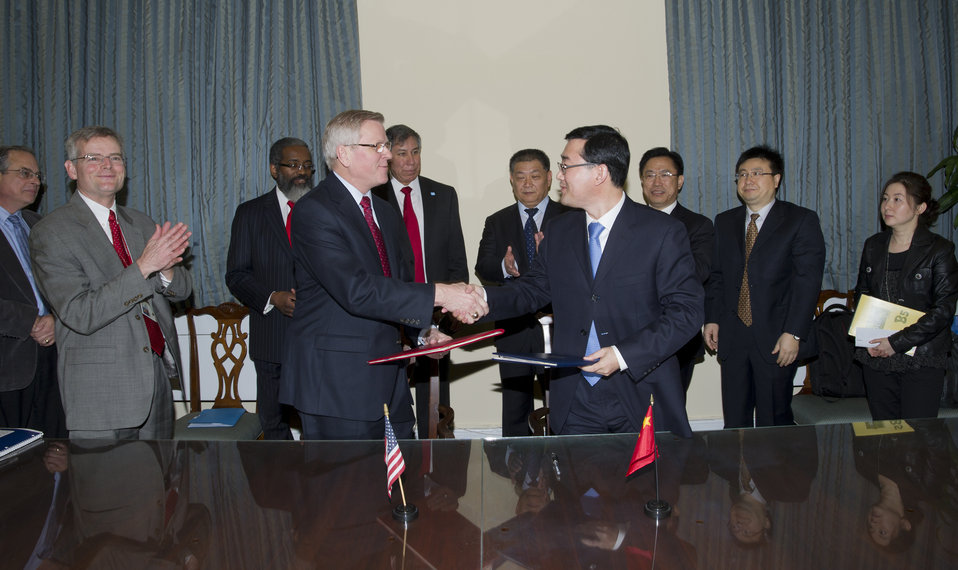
Deputy Administrator and Chief Veterinary Officer for APHIS' Veterinary Services' (VS) Dr. John Clifford (left) and Deputy Director General Department of Supervision on Animal and Plant Quarantine Administration of Quality Supervision, Inspection and Quarantine (AQSIQ) Zhao Zenglian shake hands after signing a Memorandum of Understanding (MOU) on fruit packing house suspensions; and export protocol for U.S.-origin breeding chickens (including hatching eggs and day-old chicks) at the U.S. Department of Agriculture in Washington D.C. on Tuesday, Feb. 14, 2012. Standing (left to right) Director, Center for Plant Health and Science Technology Dr. Phillip Berger, Animal and Plant Health Inspection Service (APHIS) Internal Service (IS) Russell Caplen, Administrator
Animal and Plant Health Inspection Service (APHIS) Greg Parham, Agriculture Under Secretary for Marketing and Regulatory Programs (MRP) Edward Avalos, General Administration of Quality Supervision, Inspection and Quarantine (AQSIQ) Vice Minister Yang Gang, AQSIQ Director General General Office Li Yuanping, Deputy Director General Department of International Cooperation AQSIQ Zhang Baofeng.